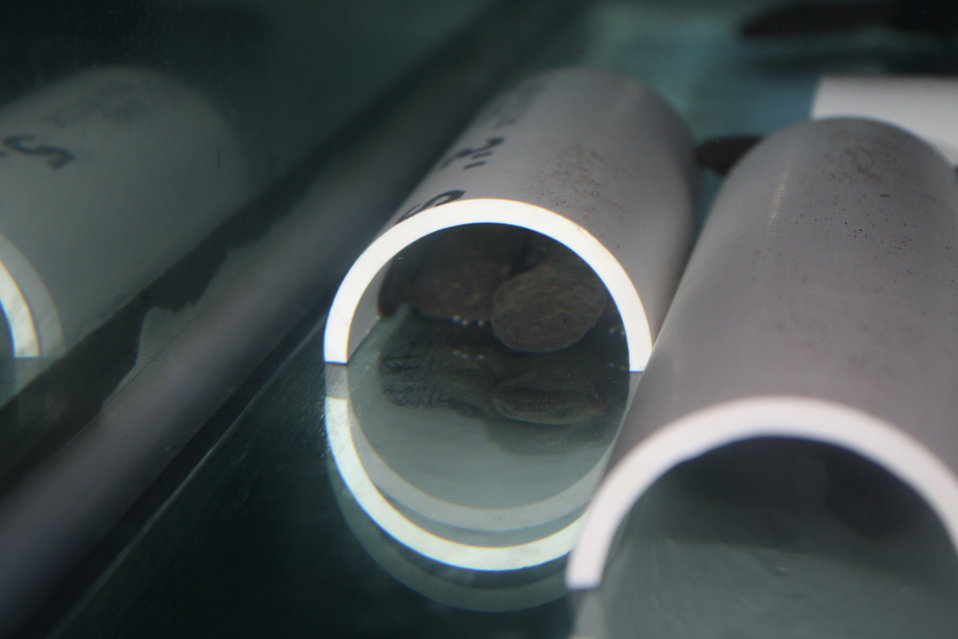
Hellbender at the Buffalo Zoo in New York.

The Buffalo Zoo received funding for hellbender research and restoration from the U.S. Fish and Wildlife Service and the New York State Department of Environmental Conservation as part of the State Wildlife Grants Program.